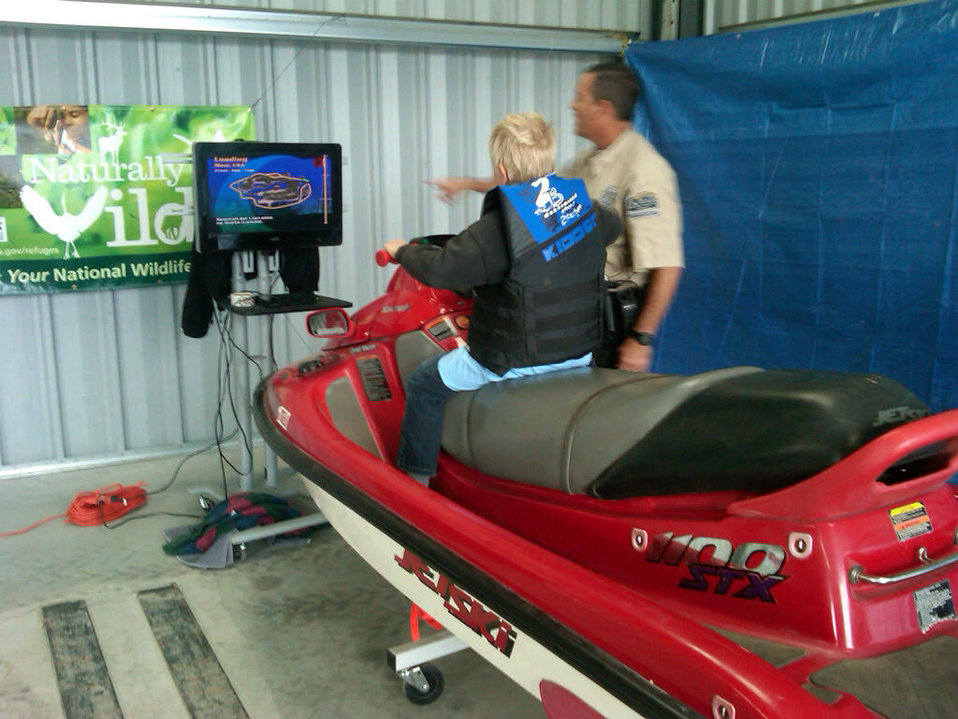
Water safety!

Kansas Department of Wildlife and Tourism Helped out the Refuges Event with a Jet Ski Water Craft Simulator.